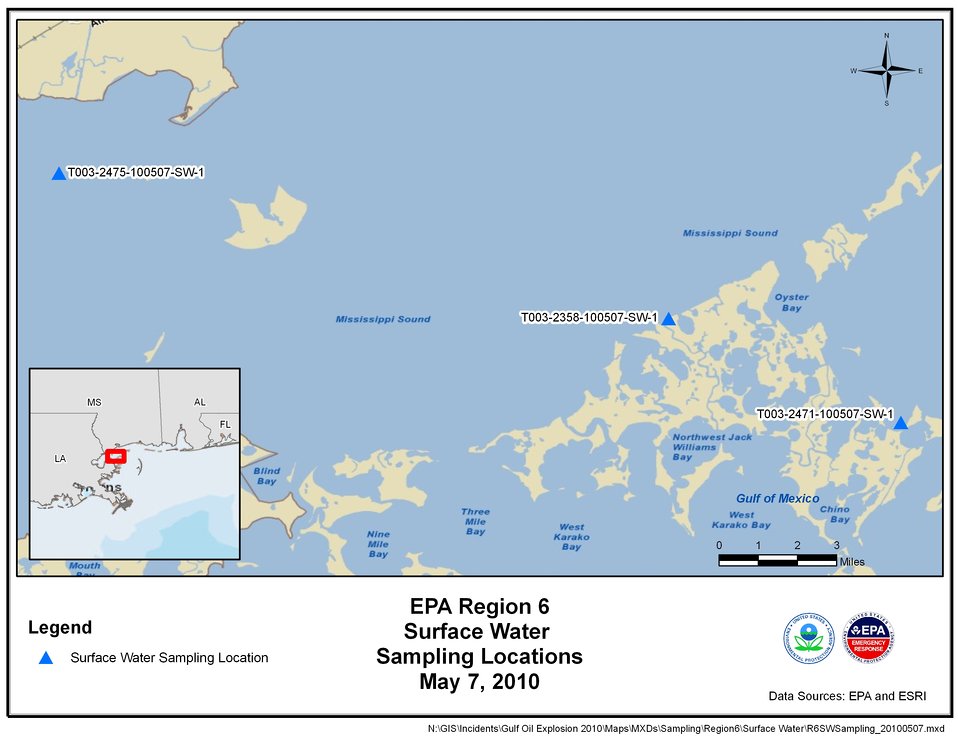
EPA Water Sampling Locations May 7, 2010